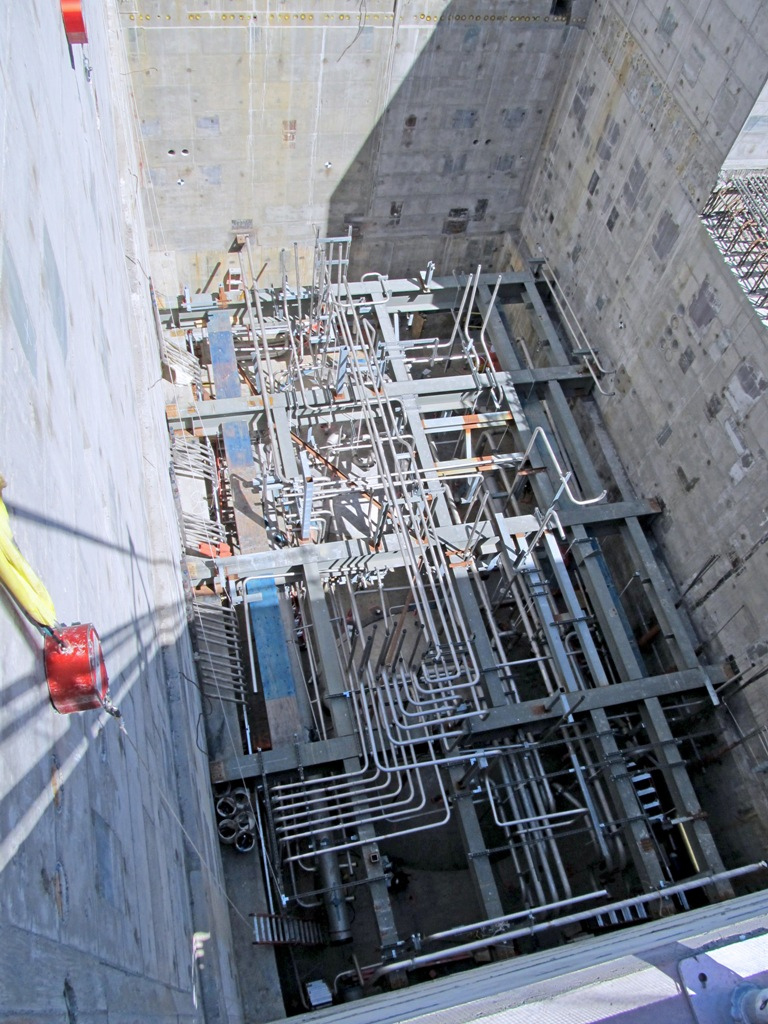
Preatreatment Piping Module 2

The piping module rests 56 feet above the ground. Pre-assembling it outside the facility was safer because it provided workers with better accessibility and enabled them to work at much lower heights.